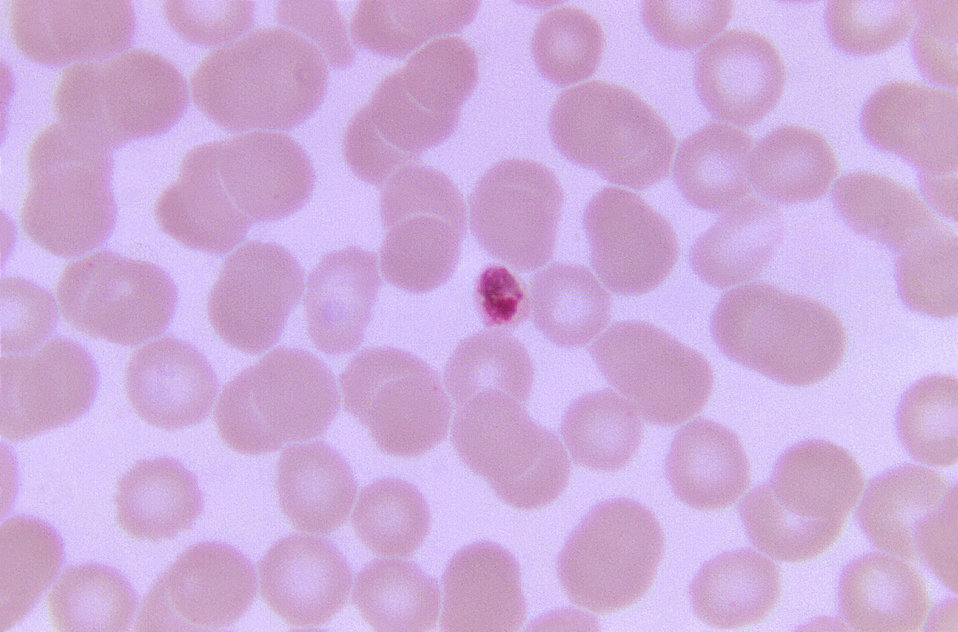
This photomicrograph depicts a Plasmodium malariae trophozoite within a small RBC, using Giemsa stain; Magnified 1125X.